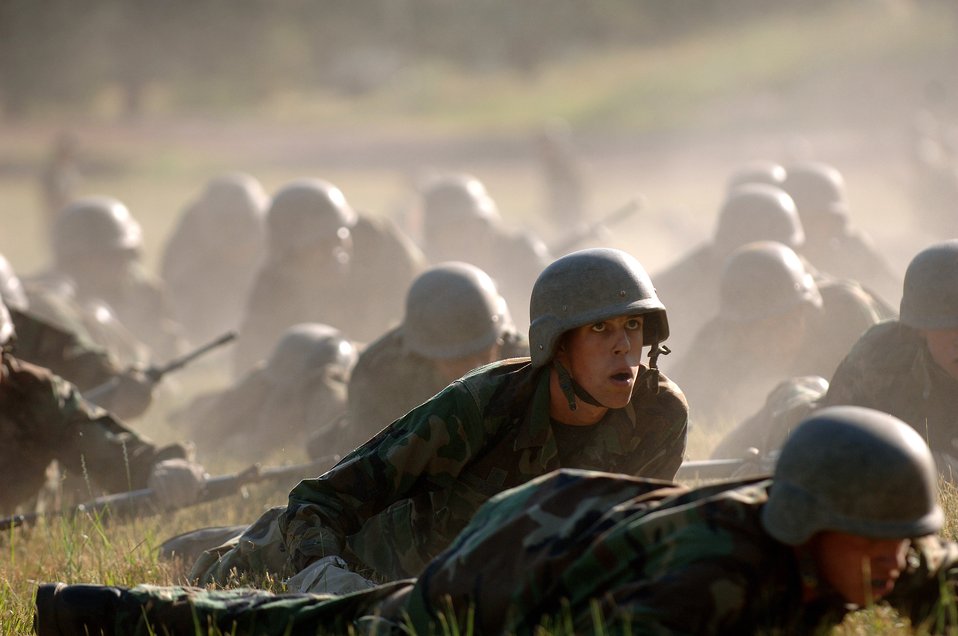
Low crawl

Academy cadets practice the low crawl July 18 prior to the bayonet assault course at Jacks Valley at the U.S. Air Force Academy in Colorado Springs, Colo. Ten squadrons of 1,280 cadets participated in the field portion of basic cadet training.